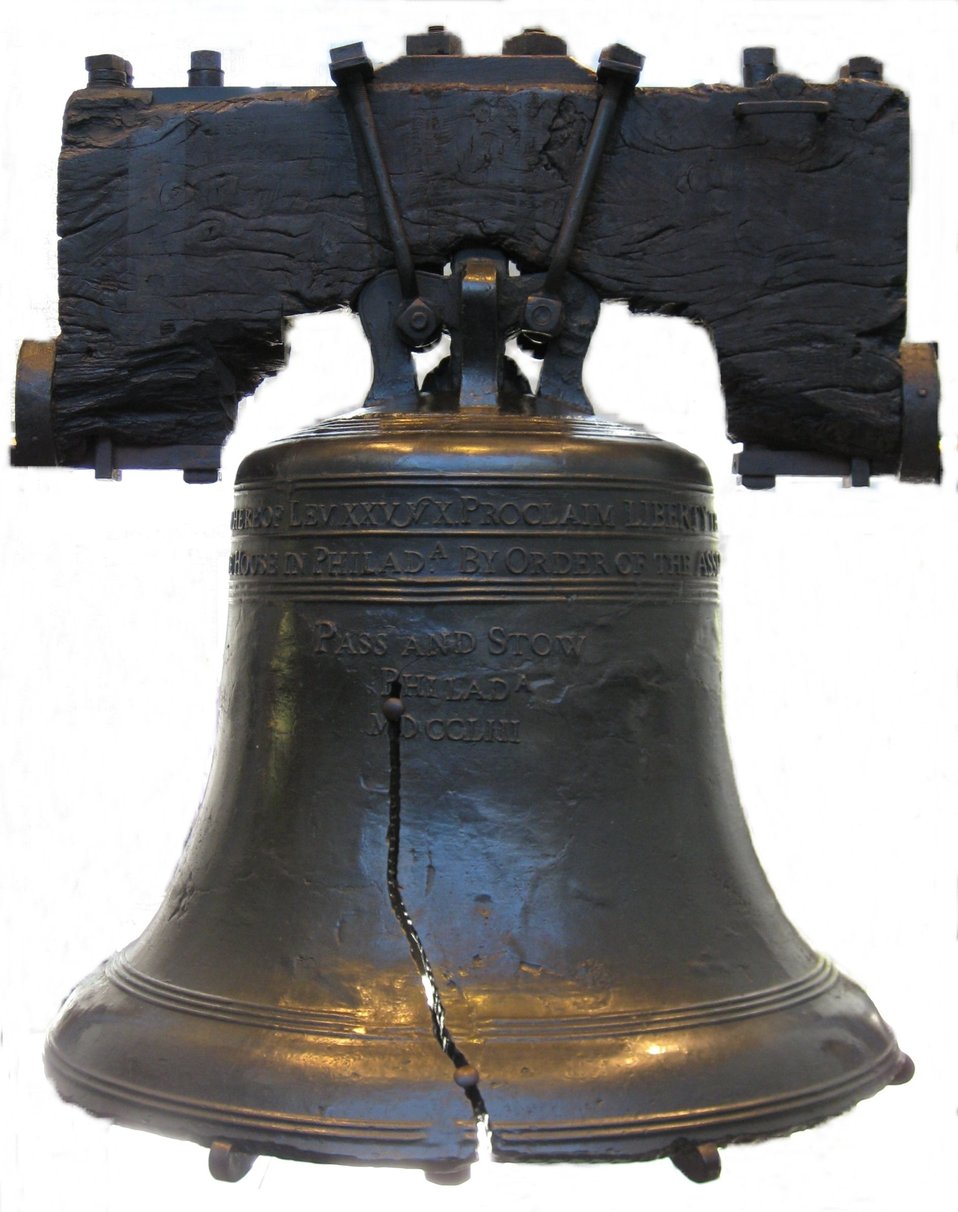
Liberty Bell at Independence National Historic Park.